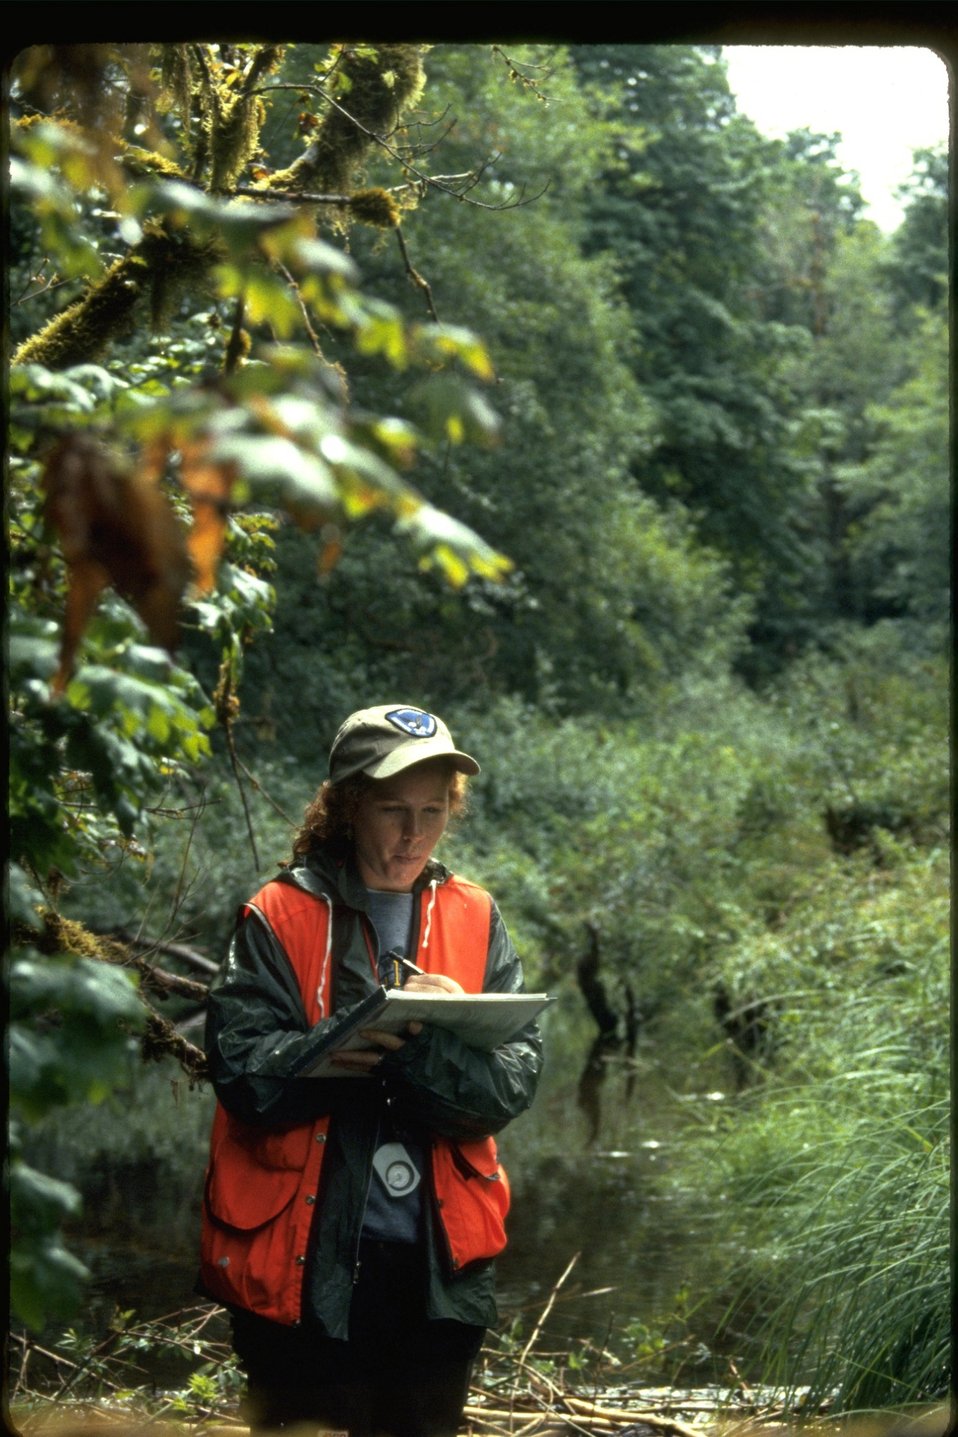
Sarah surveying Smith Creek during habitat study.